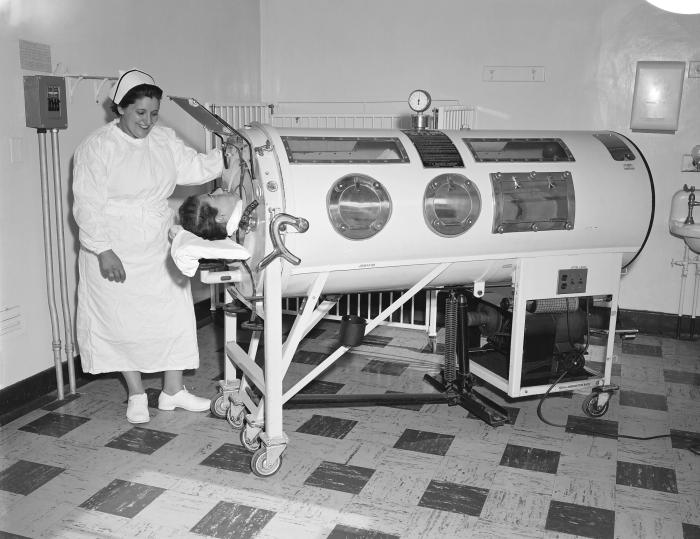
This 1960 historic photograph depicted a nurse caring for a victim of a Rhode Island polio epidemic, who was inside an Emerson respirator, also sometimes referred to as an 'iron lung' machine. Devices such as these were used by polio patients whose ability to breath was paralyzed due to this crippling viral disease.